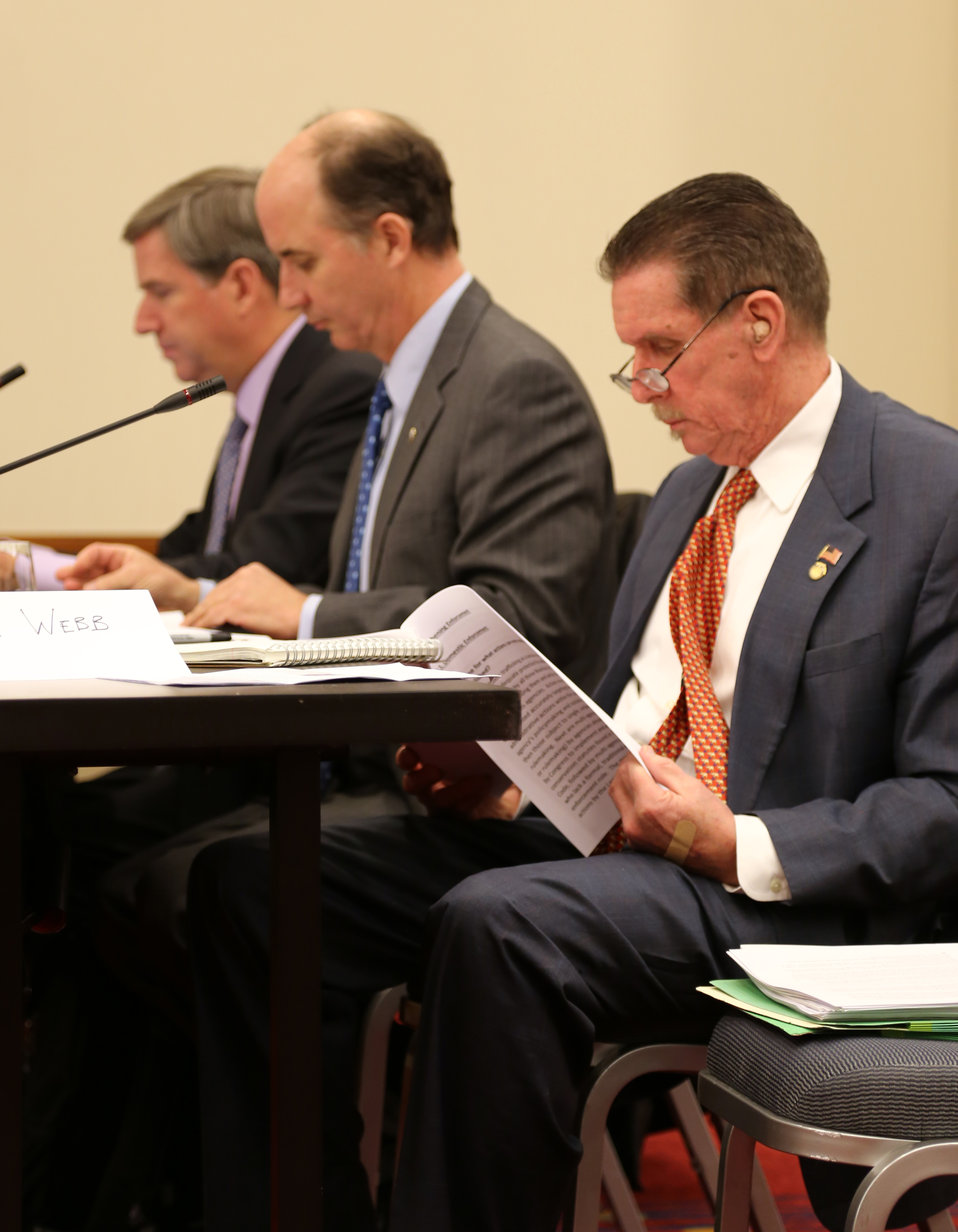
Wildlife Trafficking Advisory Council Meeting March 20, 2014